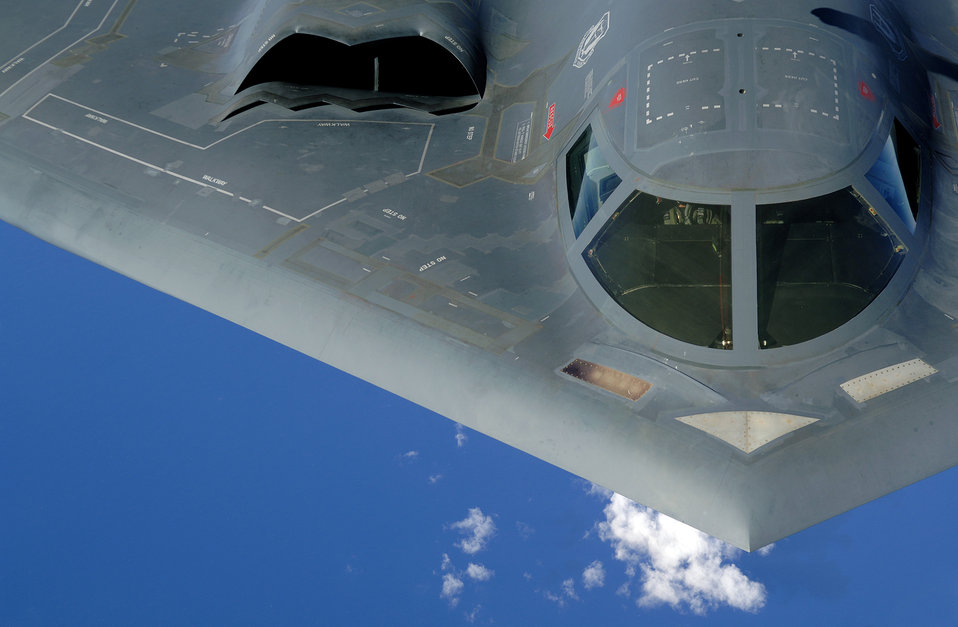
Over the Pacific

A B-2 Spirit soars after a refueling mission over the Pacific Ocean on Tuesday, May 30, 2006. The B-2, from the 509th Bomb Wing at Whiteman Air Force Base, Mo., is part of a continuous bomber presence in the Asia-Pacific region.